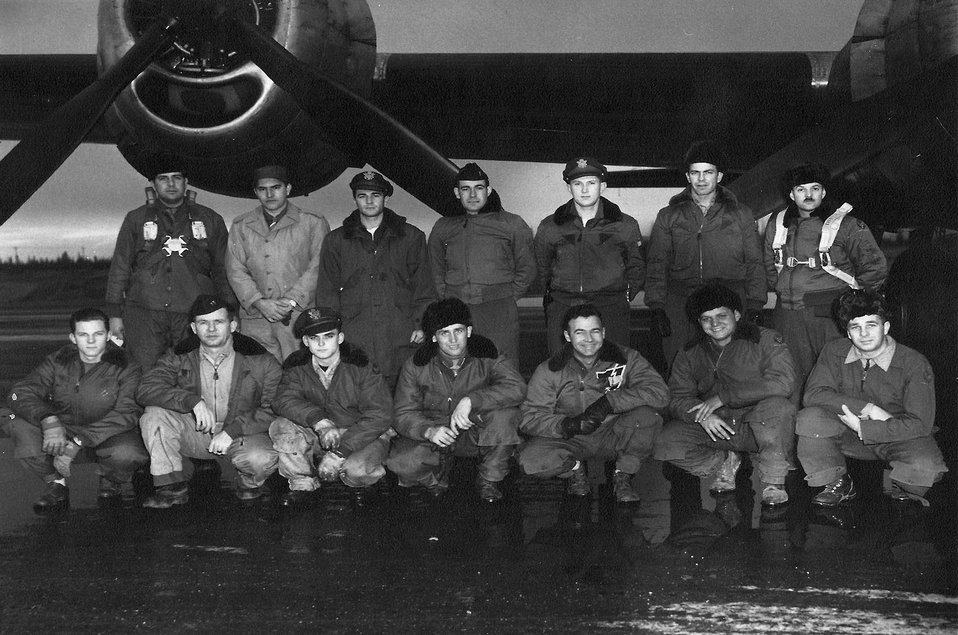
Arctic first

The crewmembers of the 46th Reconnaissance Squadron's mission to the North Pole pose before the flight Oct. 16, 1946. Back row from the left: Maj. Maynard E. White, Dr. Paul A. Siple, Lt.